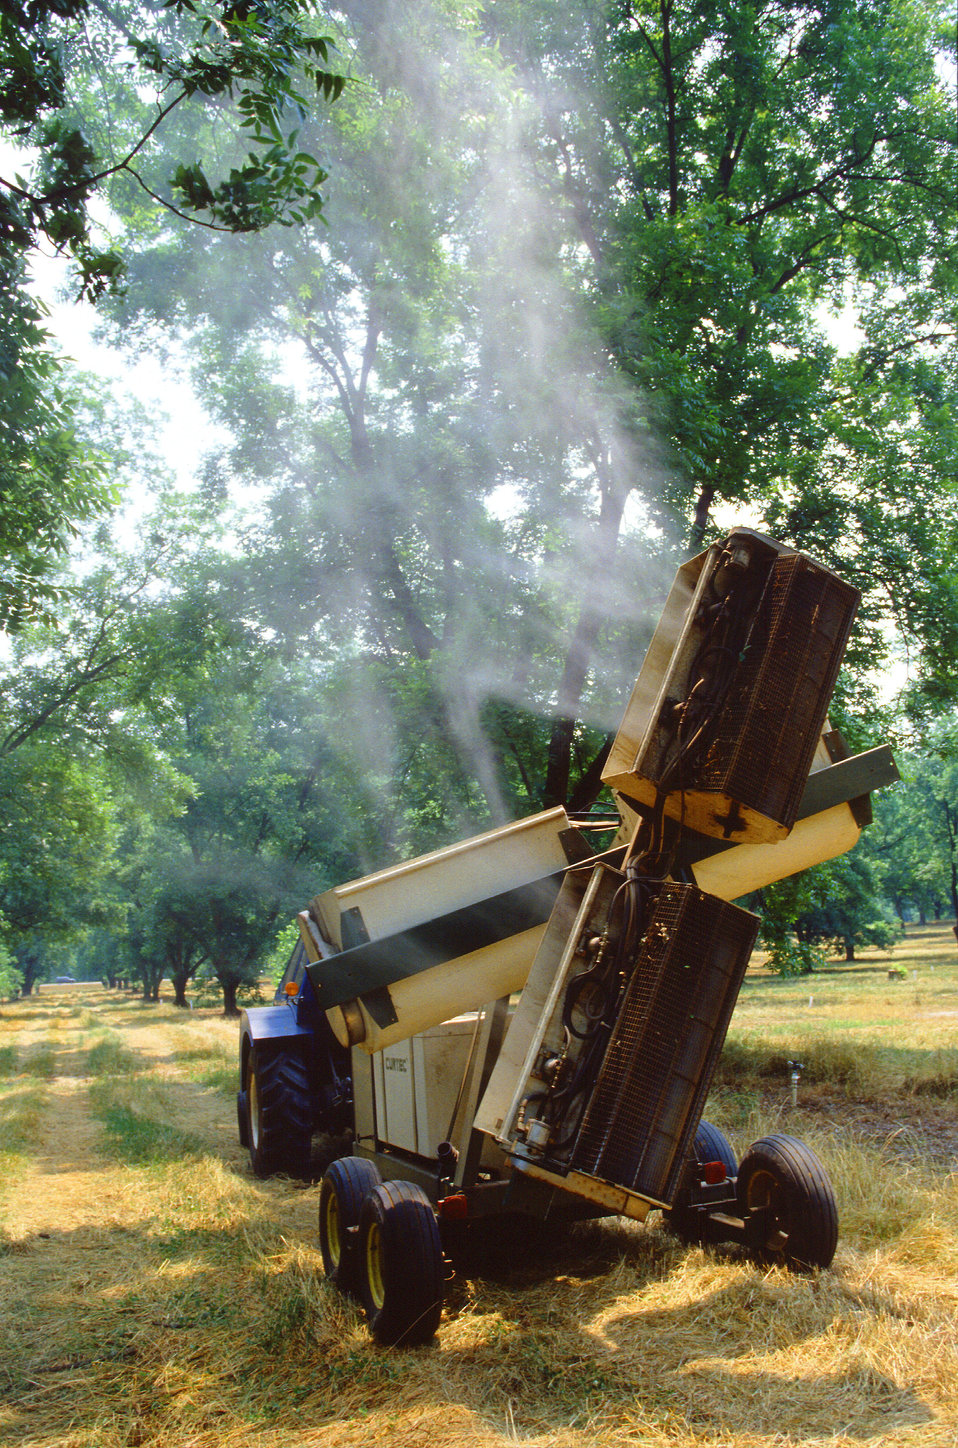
This new nozzleless sprayer uses one-half to two-thirds less spray to achieve superior coverage and penetration of the tree canopy.